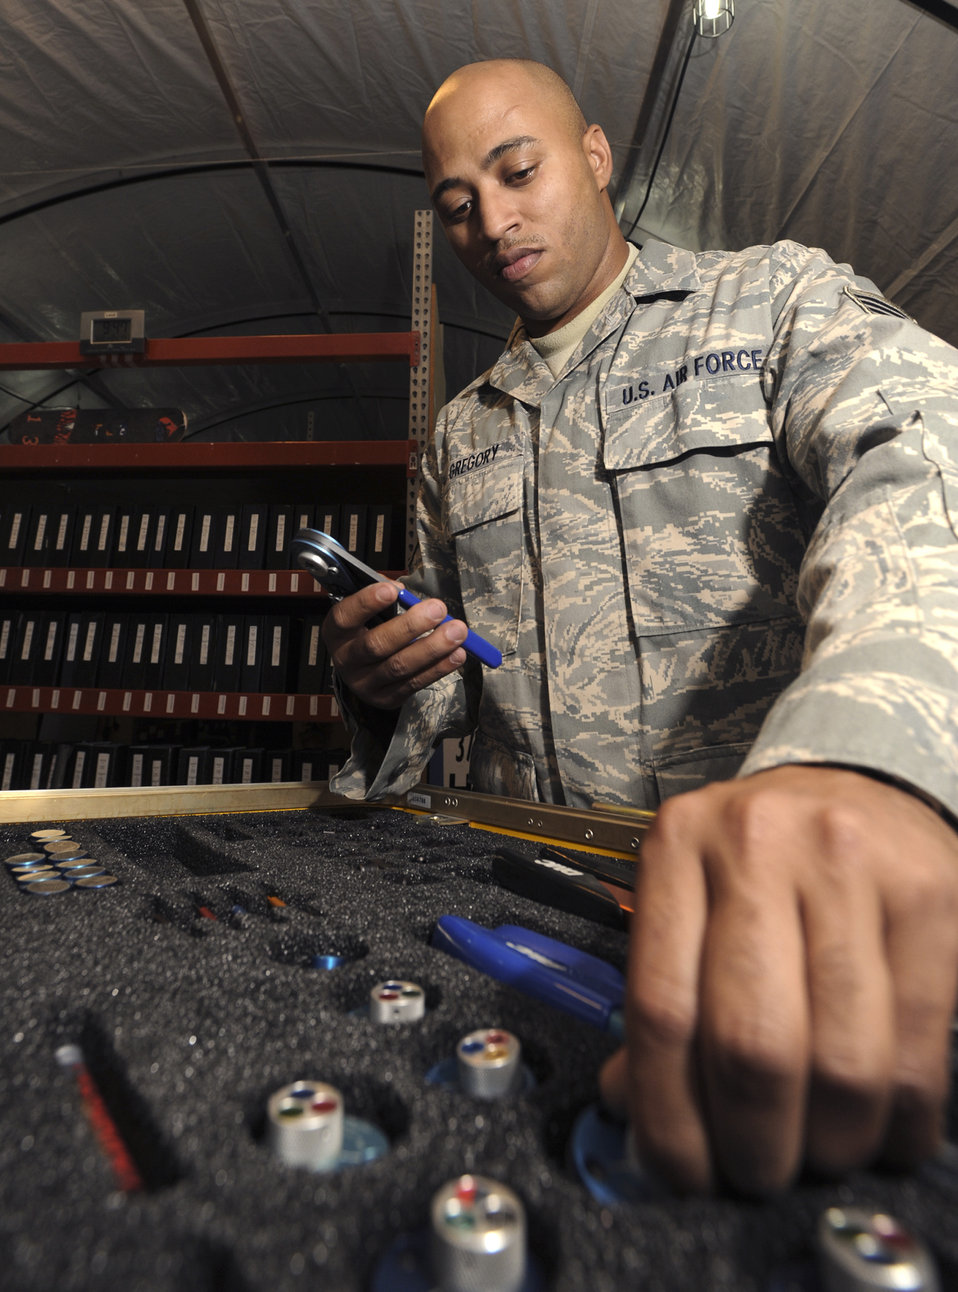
Airmen keep Hercules strong

Staff Sgt. Ivan Gregory performs a 60-day inspection on a Daniels Tool Kit April 20 at an air base in Southwest Asia. The tool kit, which is used to repair wires on an aircraft, is inspected periodically to ensure it is functioning properly. Sergeant Gregory is a 746th Aircraft Maintenance Unit avionics technician.